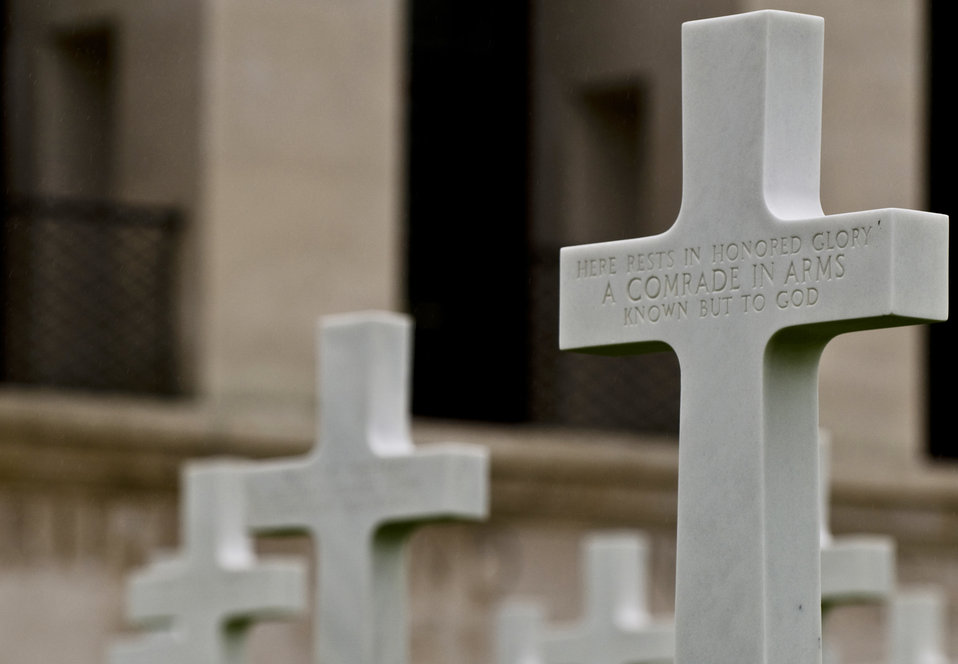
'Resolve of our Nation' found at American Cemetery

A headstone marks the site of rest for one Unknown Soldier Aug. 10 at the Cambridge American Cemetery and Memorial in Cambridge, England. There are 24 unknown soldiers buried here. In all, 3,812 Americans are buried in the cemetery and 5,127 are remembered on the Tablets of the Missing.